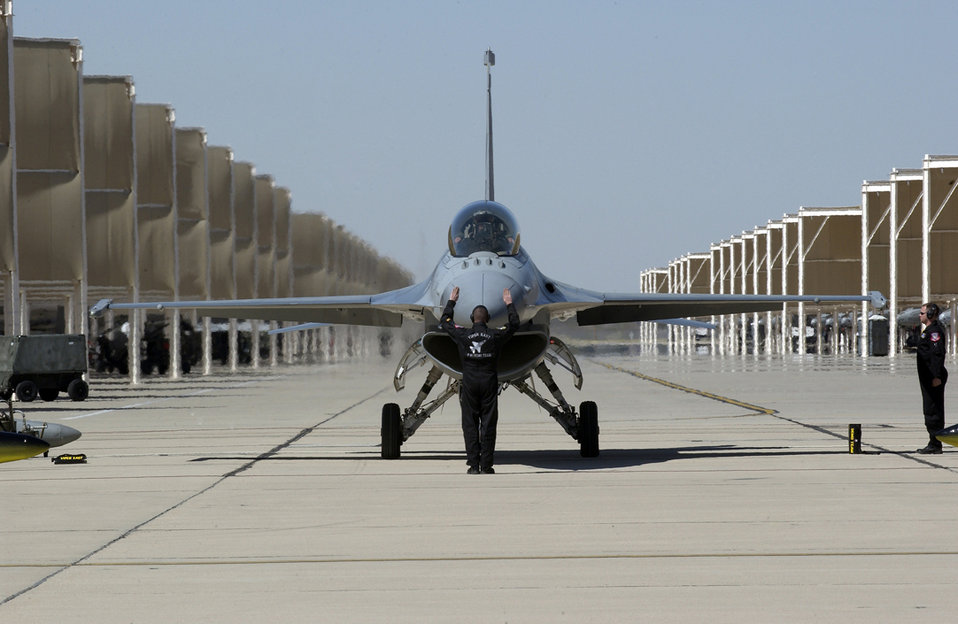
Demonstration team excels at Heritage Conference

An F-16 Fighting Falcon from Hill Air Force Base, Utah, is parked after flying an aerial demonstration mission March 3 during the Heritage Conference at Davis-Monthan AFB, Ariz.